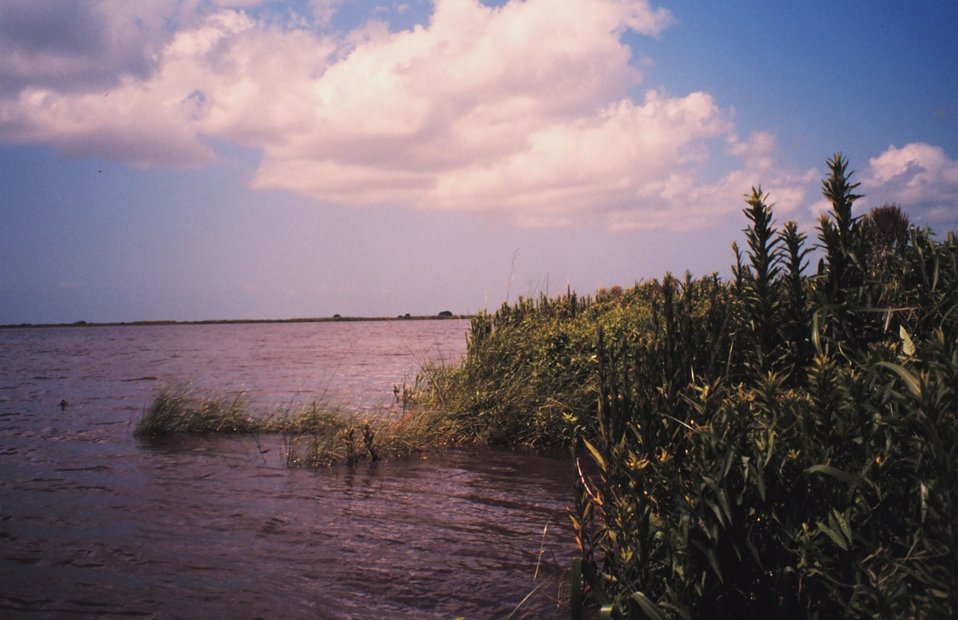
Fringing marsh along a small bay outside west levee of lower Mississippi River.